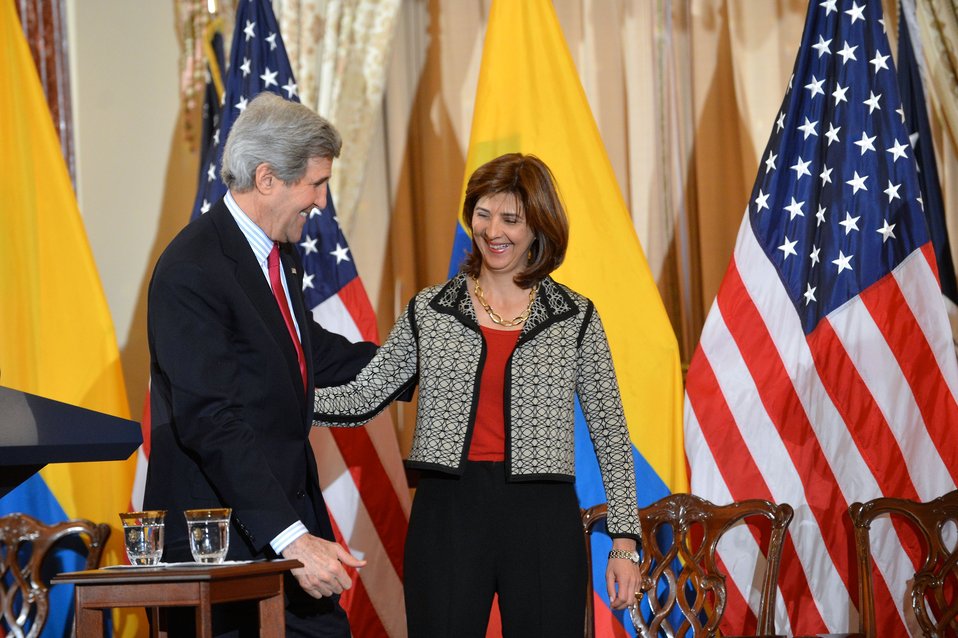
Secretary Kerry and Colombian Foreign Minister Holguin Walk Off Stage After Addressing the U.S.-Colombia High-Level Partnership Dialogue

U.S. Secretary of State John Kerry and Colombian Foreign Minister Maria Holguin walk off stage after delivering remarks at the Fourth Annual U.S.-Colombia High-Level Partnership Dialogue the U.S. Department of State in Washington, D.C., on February 28, 2014.